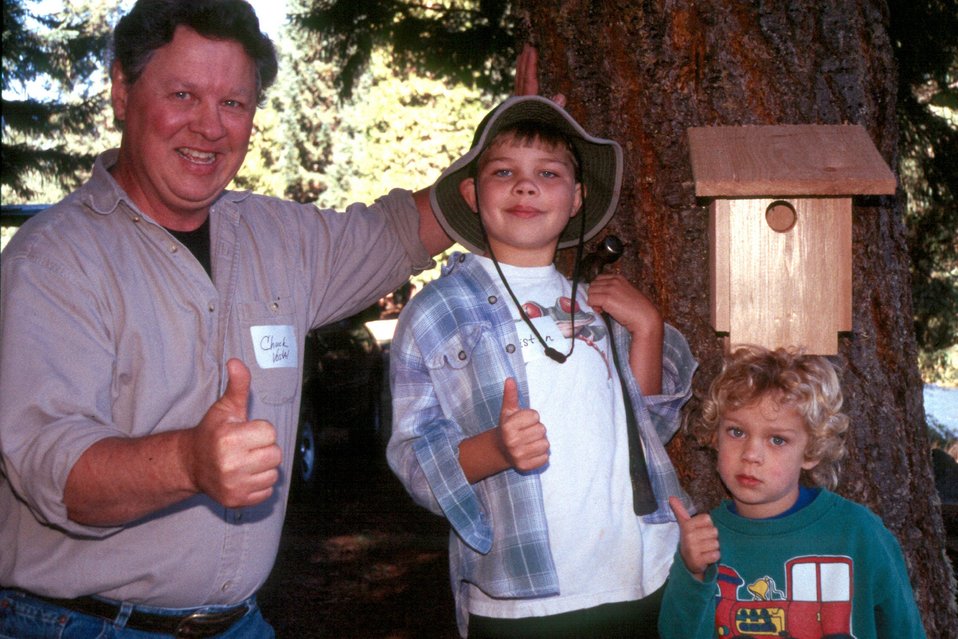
BLM employee Chuck Vostal with volunteers Triston and Reid Center showing off their finished bird box